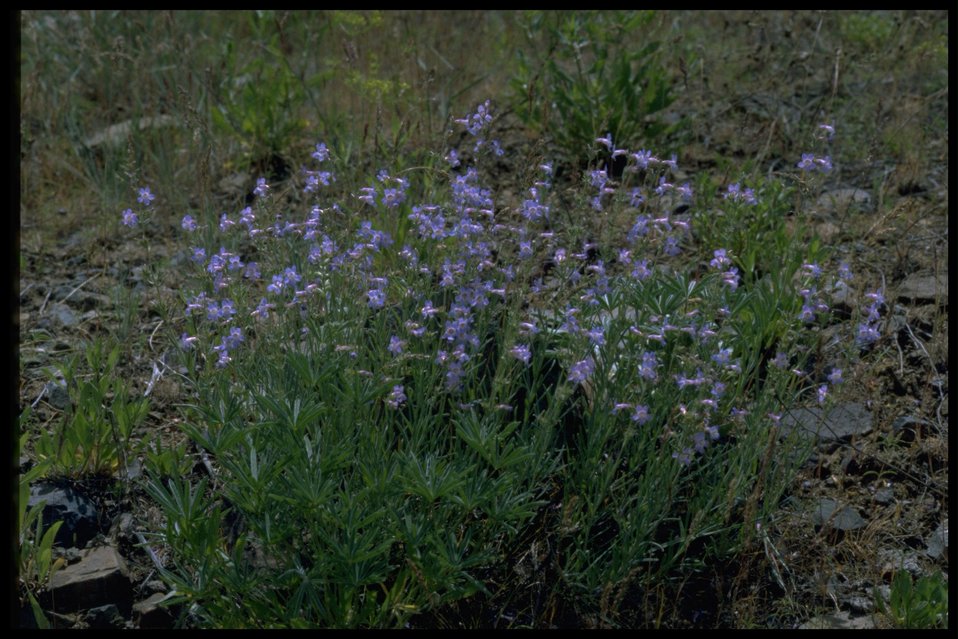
Farshot of Gairdner Penstemon wildflowers.